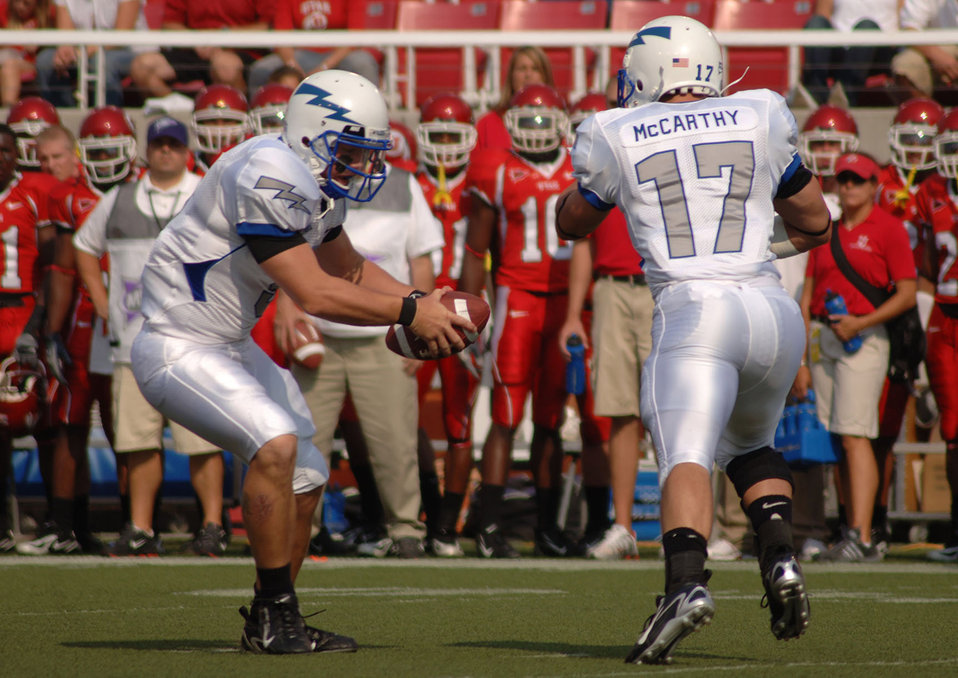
Football: Falcon defense stops Utah, 20-12

U.S. Air Force Academy Falcons quarterback Shaun Carney readies a hand off to senior tailback Kip McCarthy Sept. 8 in Salt Lake City. Cadet McCarthy carried four times for 11 yards in Air Force's 20-12 win.